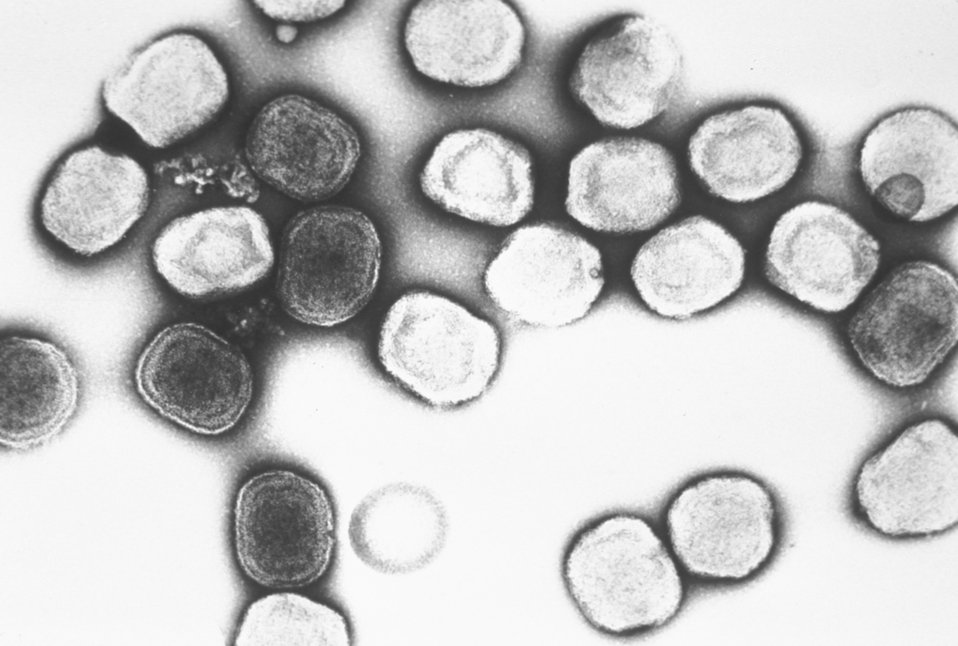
An electron micrograph of Vaccinia virions; a virion is a single complete and infectious virus particle.